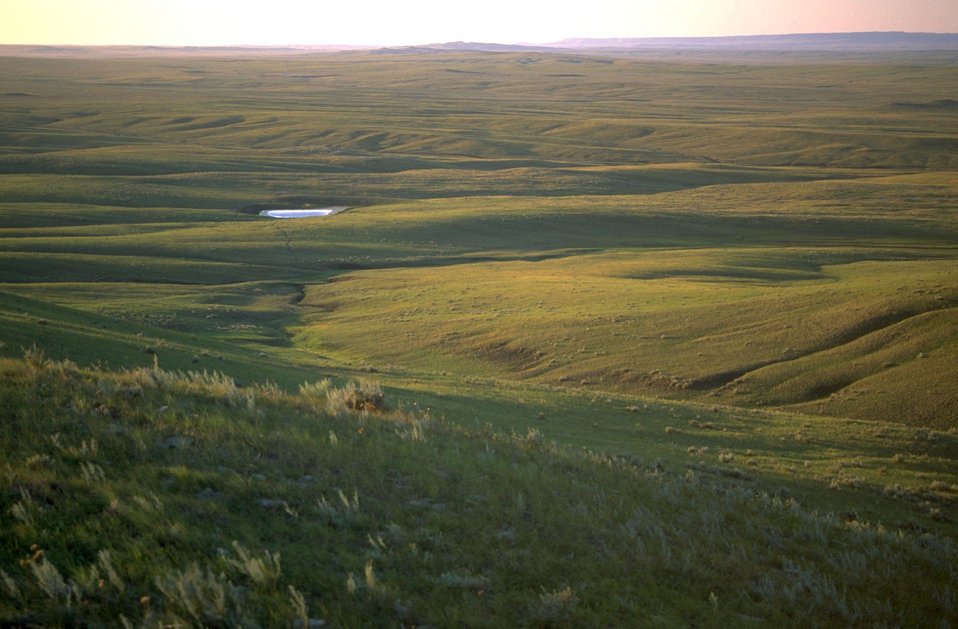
Stock Dam on a Grassland Vista